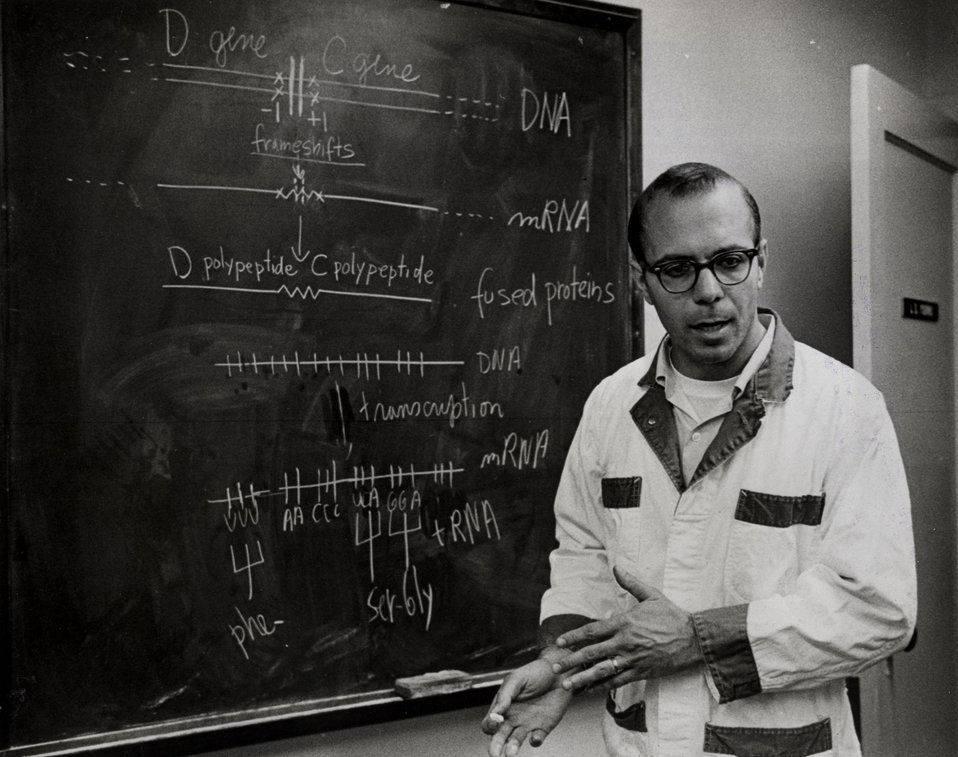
Existence of four letter words in the genetic code that controls the makeup and amount of all proteins, ultimately affecting the cell's ability to divide, was first demonstrated conclusively by Dr. Yourno and his colleagues.
c.1973